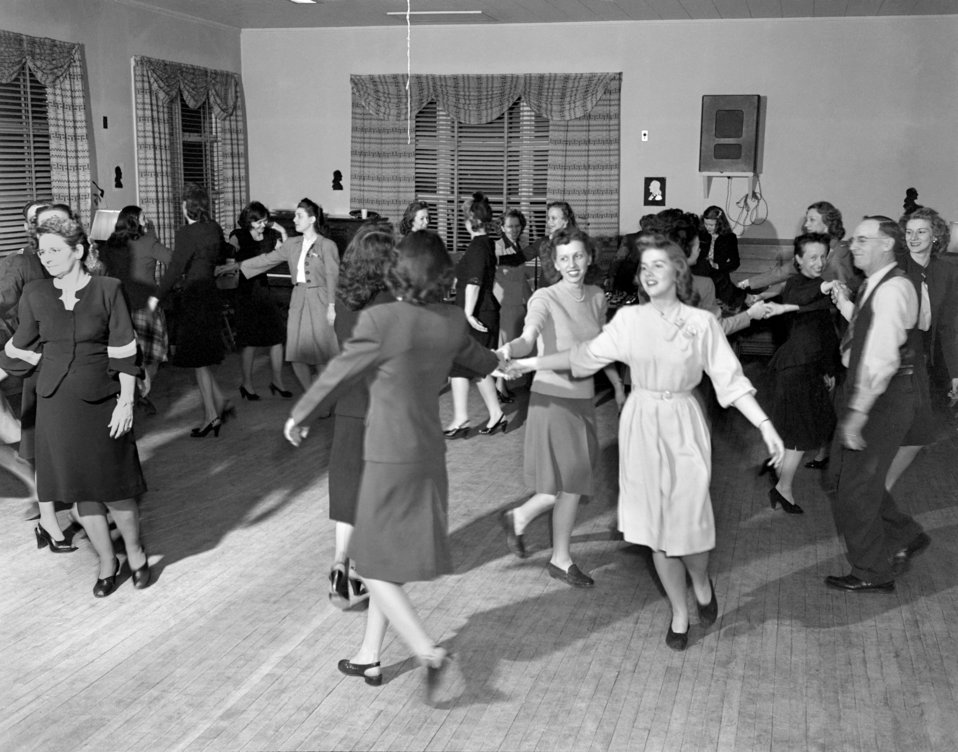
A.E.C. Girls Club Oak Ridge 1947

3313-3a DOE photo Ed Westcott 2-24-1947 Oak Ridge Tennessee